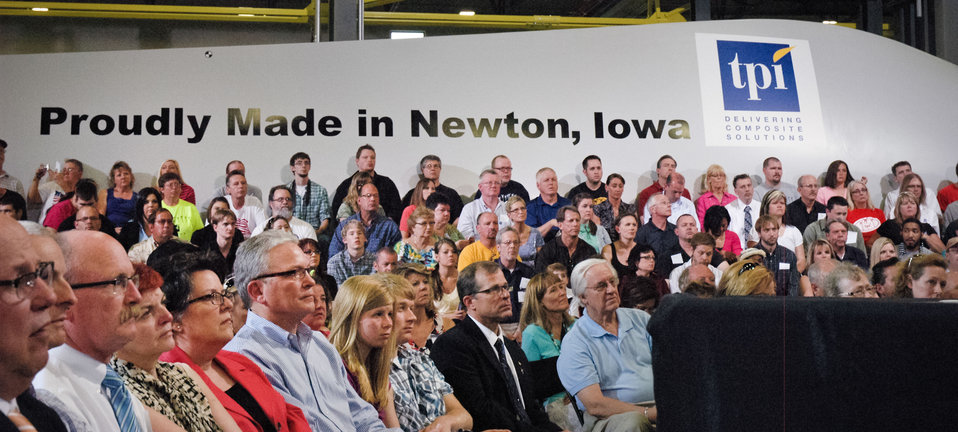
Agriculture Secretary Tom Vilsack speaks to a crowd of about 500 people at TPI, a maker of wind turbine blades that employs 700 people at its Newton, Iowa plant on Thursday, May 24, 2012.